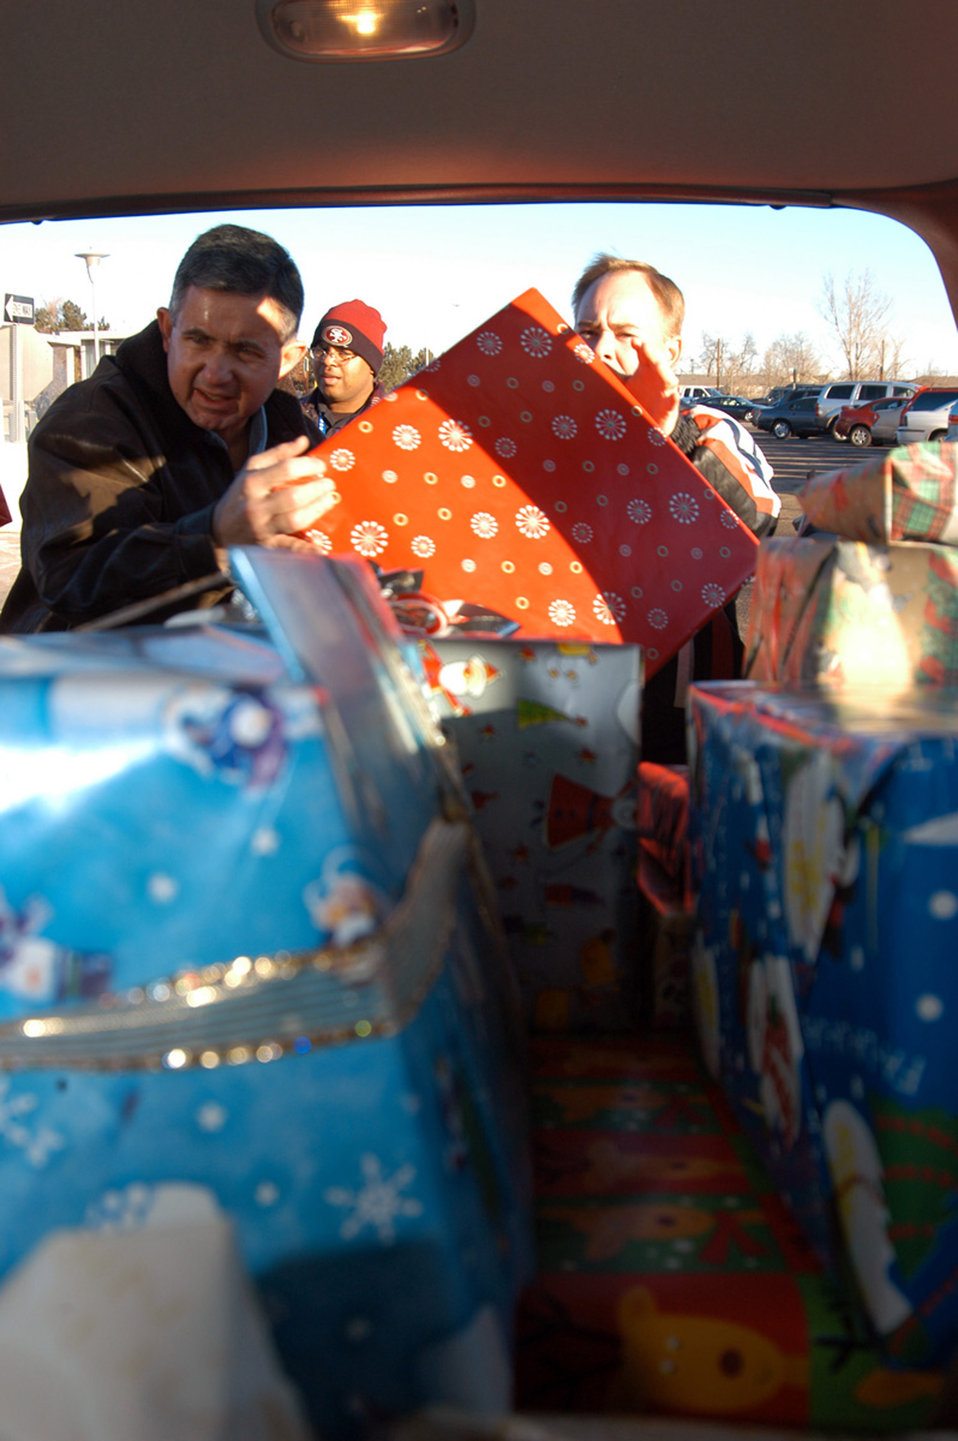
Top 3 donations

DENVER (AFPN) -- (From left) Master Sgts. Bryan Burgess, Damian Maddox and Laramie Reece, to be delivered to less fortunate families. The Top 3 Airmen are from the Air Reserve Personnel Center here.